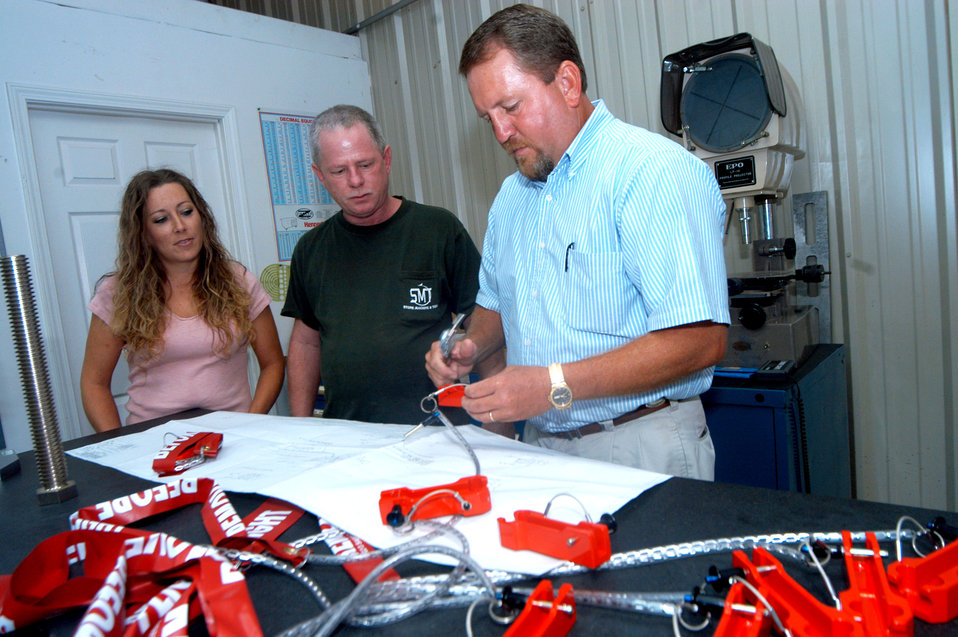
Breakout program benefits Air Force, local businesses

Lana Stone and Bobby Hutson look on as David Whiddon examines some parts the business had produced for the U-2S Breakout program Sept. 12 at Robins Air Force Base, Ga. Ms. Stone is the Stone Machine and Tool Inc. owner and president, and Mr. Hutson is the quality manager for the company. Mr. Whiddon is the Breakout program manager.